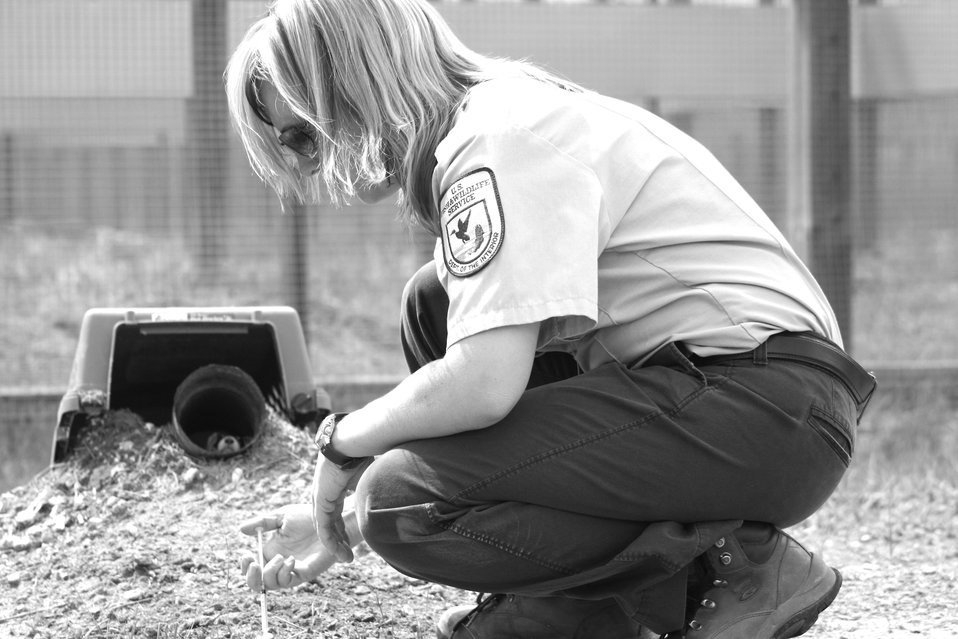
Interns visit the NBFFCC

In the summer of 2012, USFWS Region 6 interns visited the National Black-footed Ferret Conservation Center (NBFFCC) in Colorado to learn how the program reintroduces the endangered Black-footed ferret back into its native habitat.

In this photo, Robyn Bortner (NBFFCC Biologist) feeds the ferrets in their outdoor preconditioning pens!